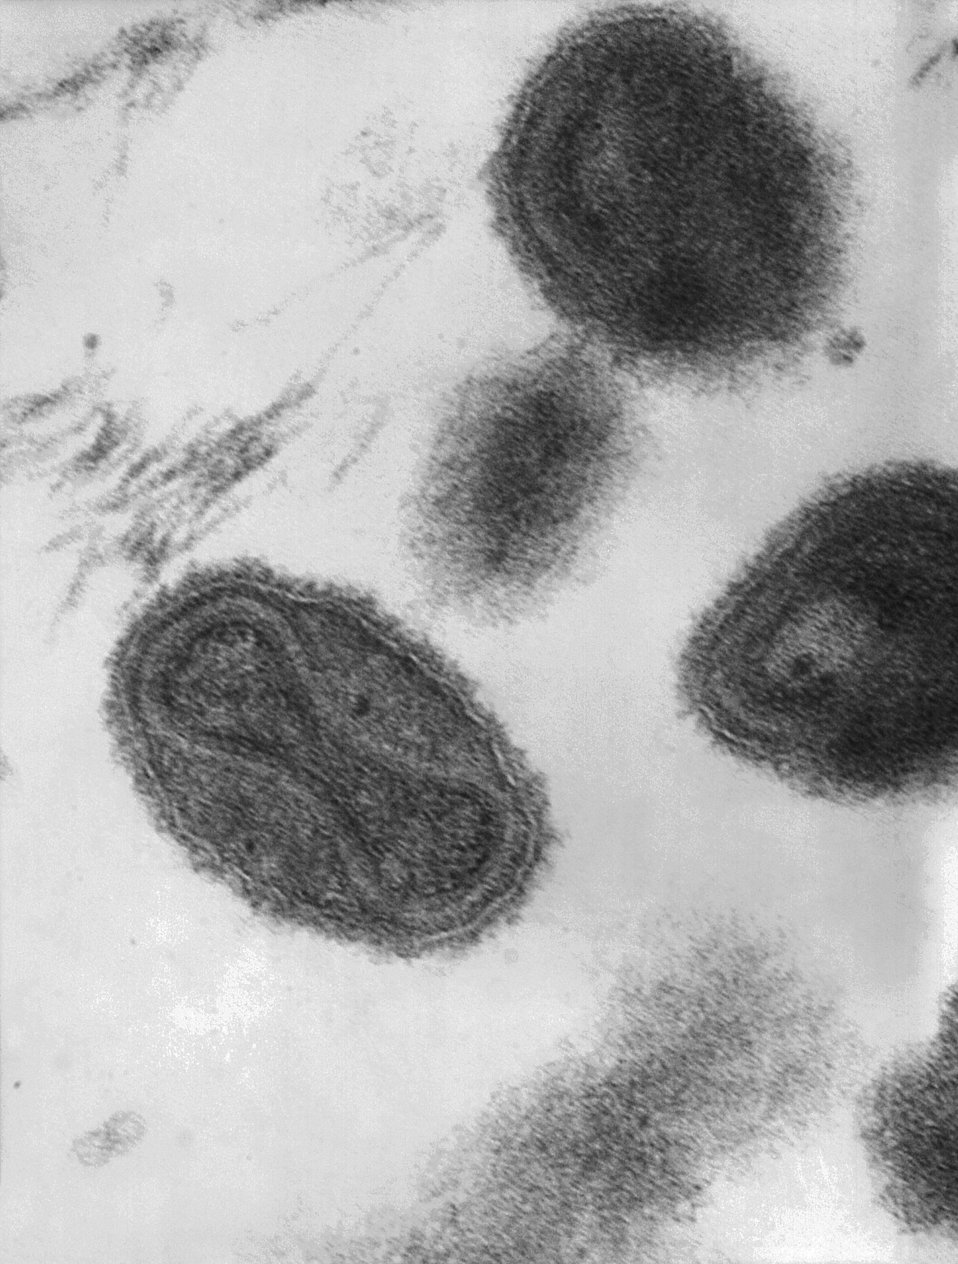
This transmission electron micrograph (TEM) depicts a number of smallpox virus virions; Mag - approximately 370,000x.